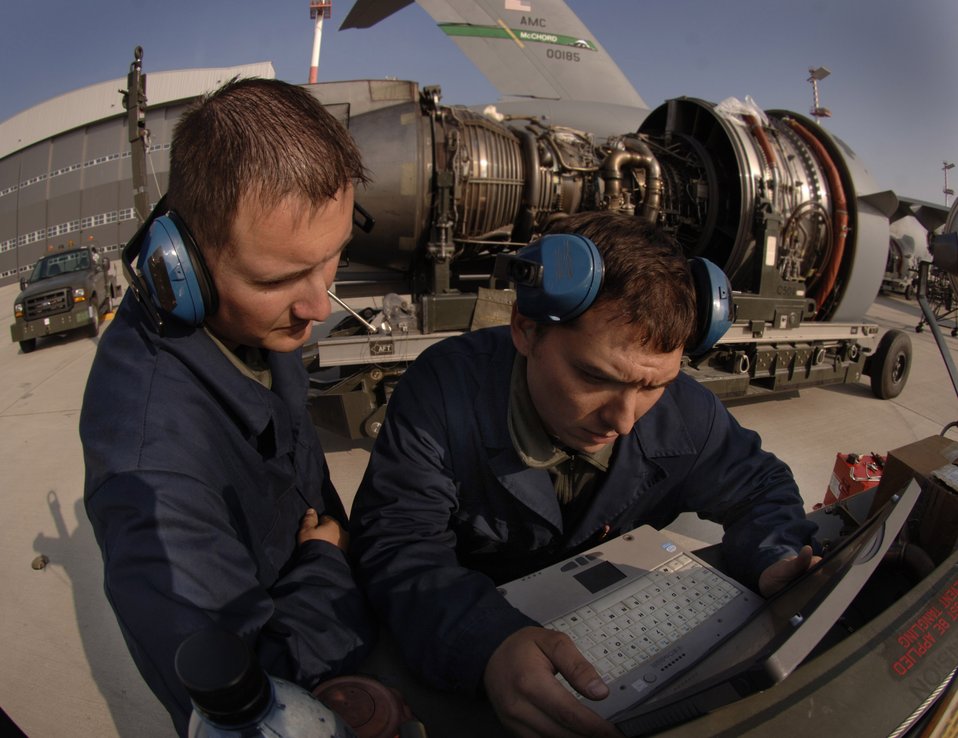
Ramstein flightline ops

Staff Sgt. Erik Marsaln (right) and Senior Airman Bill Metz consult engine technical orders on a laptop that will guide them through an engine change-out on a C-17 Globemaster III at Ramstein Air Base, Germany, Oct. 11. The Airmen are jet engine mechanics assigned to the 723rd Air Mobility Squadron.